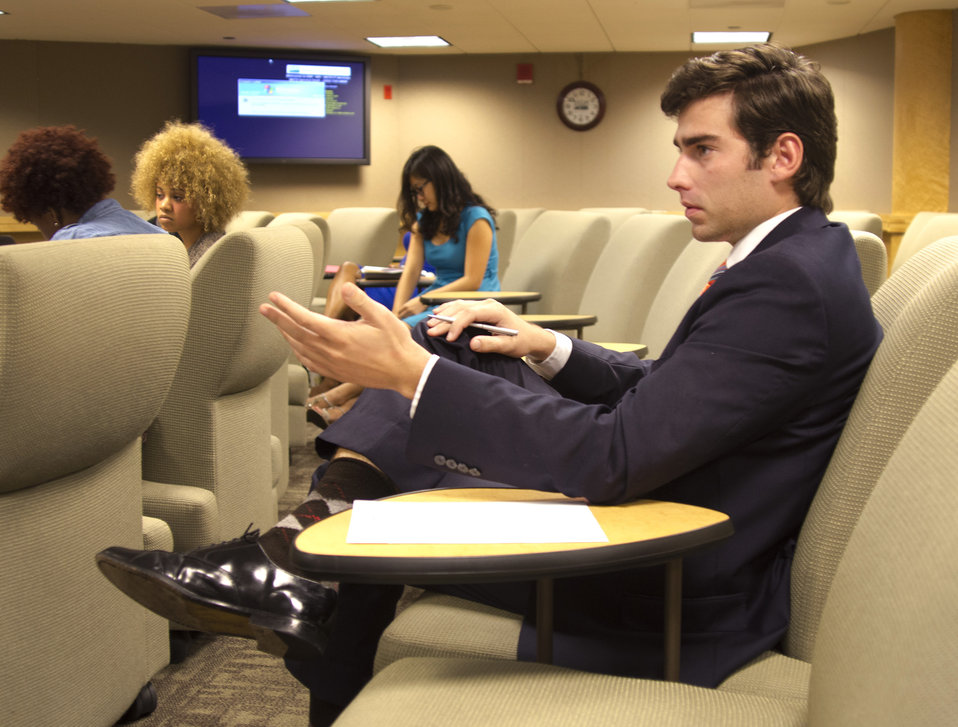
U.S. Department of Agriculture (USDA) Foreign Agricultural Service (FAS) intern Tyler Anderson responds to a question presented at the USDA Internship Program Listening Session held in USDA’s South Building in Washington, D.C. on Monday, August 7, 2012. The purpose of the USDA Internship Program Listening Session is to provide interns with a forum to express their views about their experiences as a USDA intern. These young people will be among the most promising future USDA leaders and participate in an individual discussion and group session that will develop leadership skills.